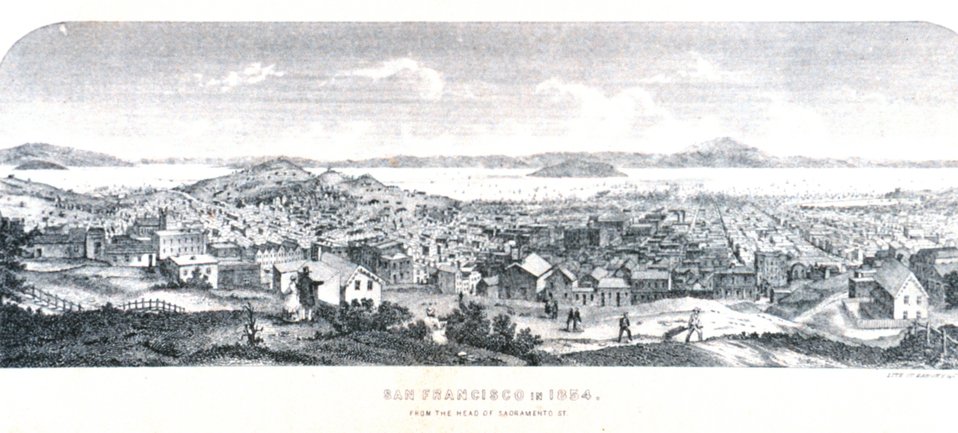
San Francisco 1854. From the head of Sacramento Street. In: 'The Annals of San Francisco'. Frank Soule, John Gihon, and James Nesbit. 1855. Page 510. D. Appleton & Company, New York. F869.S3.S7 1855.